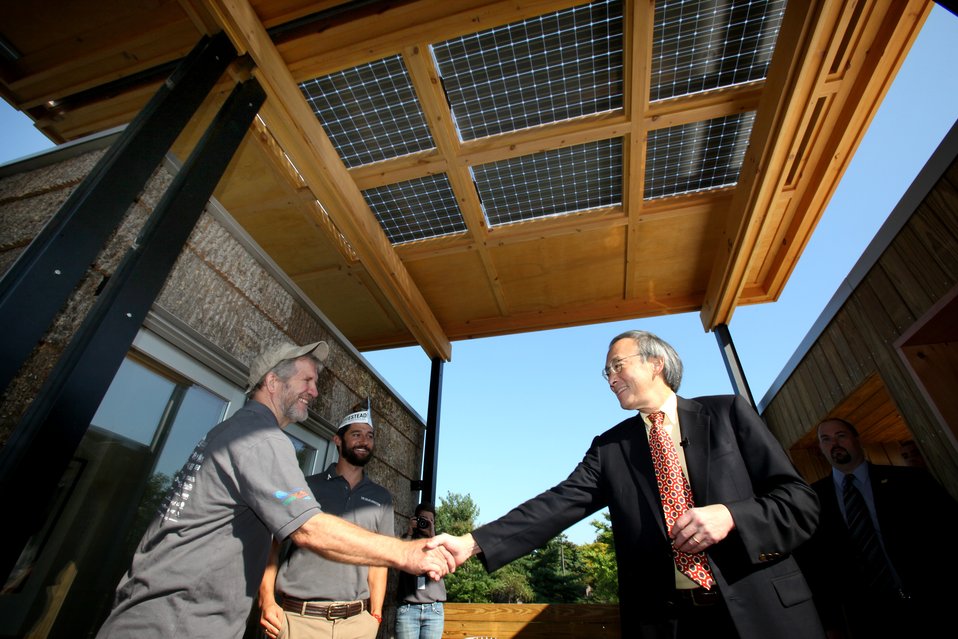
Energy Secretary Steven Chu speaks with members from the Appalachina State University during the U.S. DOE Solar Decathlon, Washington, DC, September 30, 2011. (Credit: S.Paltera/ U.S. DOE / Solar Decathlon)
The Solar Decathlon is a competition that challenges college and university teams from around the world to design, build, and operate solar-powered houses that are affordable, highly energy efficient, attractive, and easy to live in. The 2011 teams and their houses represented a broad range of design solutions, geographic locations and climate, and were targeted toward urban, suburban and rural settings. The houses were intended for different housing markets, including lower-income, disaster relief, retirement, and single family.